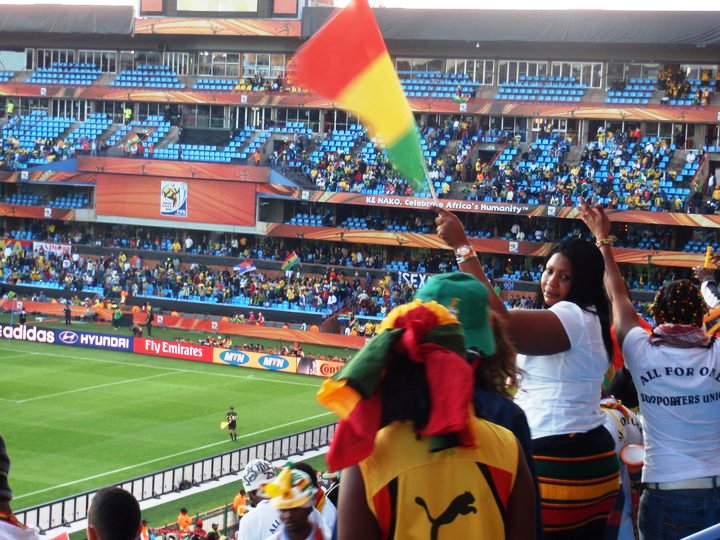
Ghanaian fans cheer during the Ghana vs. Serbia World Cup soccer match at Loftus Versfeld Stadium in Tshwane, Pretoria, South Africa, on June 13, 2010.